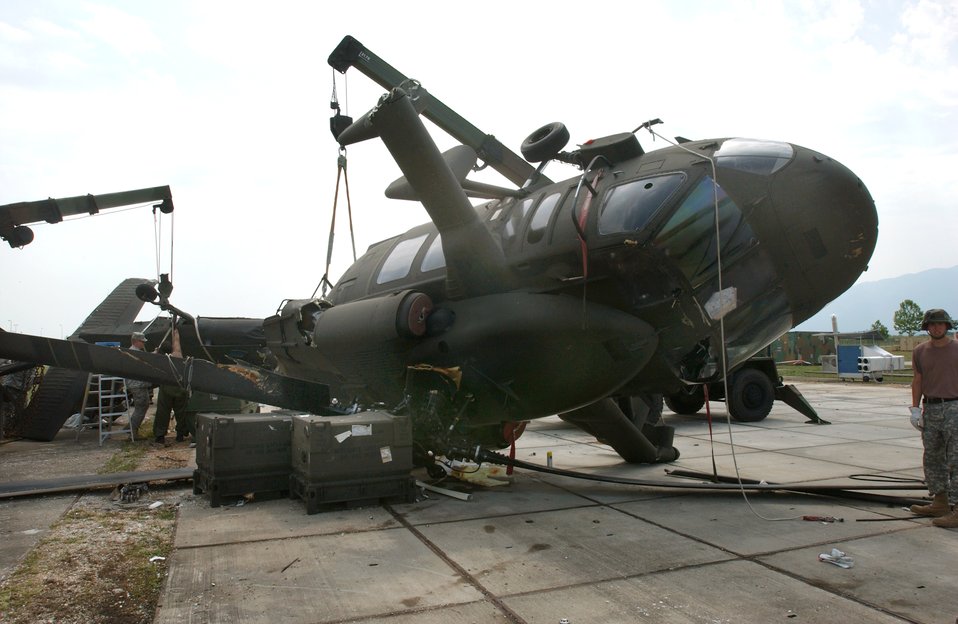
This side up

Servicemembers prepare to stabilize an aircraft at Aviano Air Base, Italy, on July 6. The aircraft suffered damage after a severe thunderstorm with wind gusts that measured up to 82 knots. The storm tore through Aviano on June 29, and caused basewide damage estimated at $3.5 million.